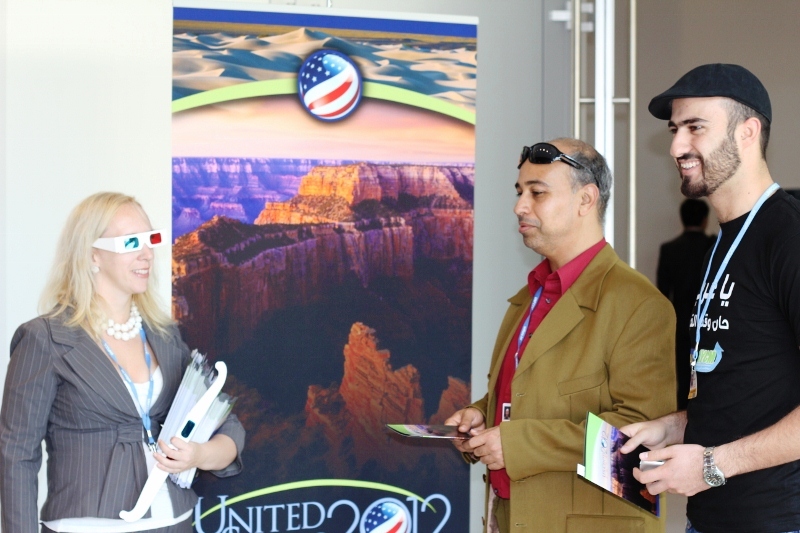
Visitors at the U.S. Center

Visitors learn about U.S. climate actions at the U.S. Center at the 18th Session of the Conference of the Parties to the UN Framework Convention on Climate Change (COP-18) in Doha, Qatar, November 27, 2012.